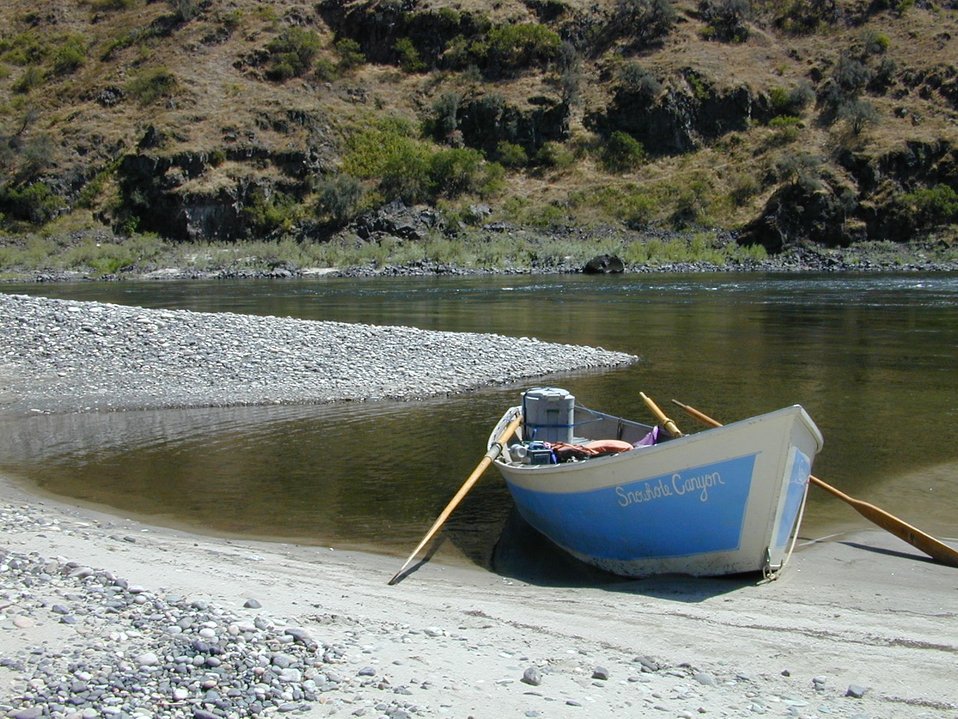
Recreation Dory boat on Lower Salmon River Cottonwood Field Office UCSC Upper Columbia Salmon Clearwater District